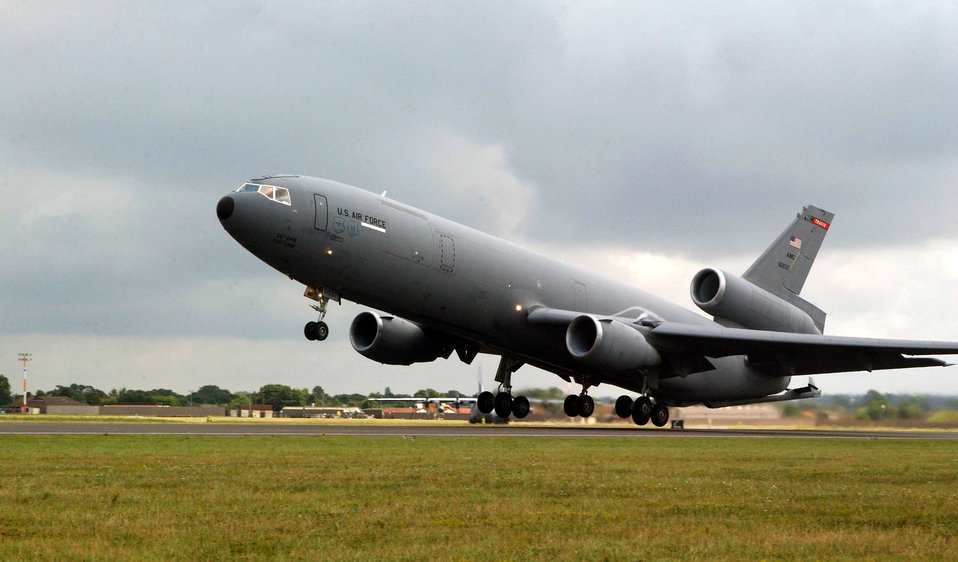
Extender lift off

ROYAL AIR FORCE MIDENHALL, England -- A KC-10 Extender from Travis Air Force Base, Calif., takes off on a mission. The 100th Air Refueling Wing here provides operational support, and the base serves as a transiting point for personnel, aircraft and equipment destined for Europe, Africa and Southwest Asia.